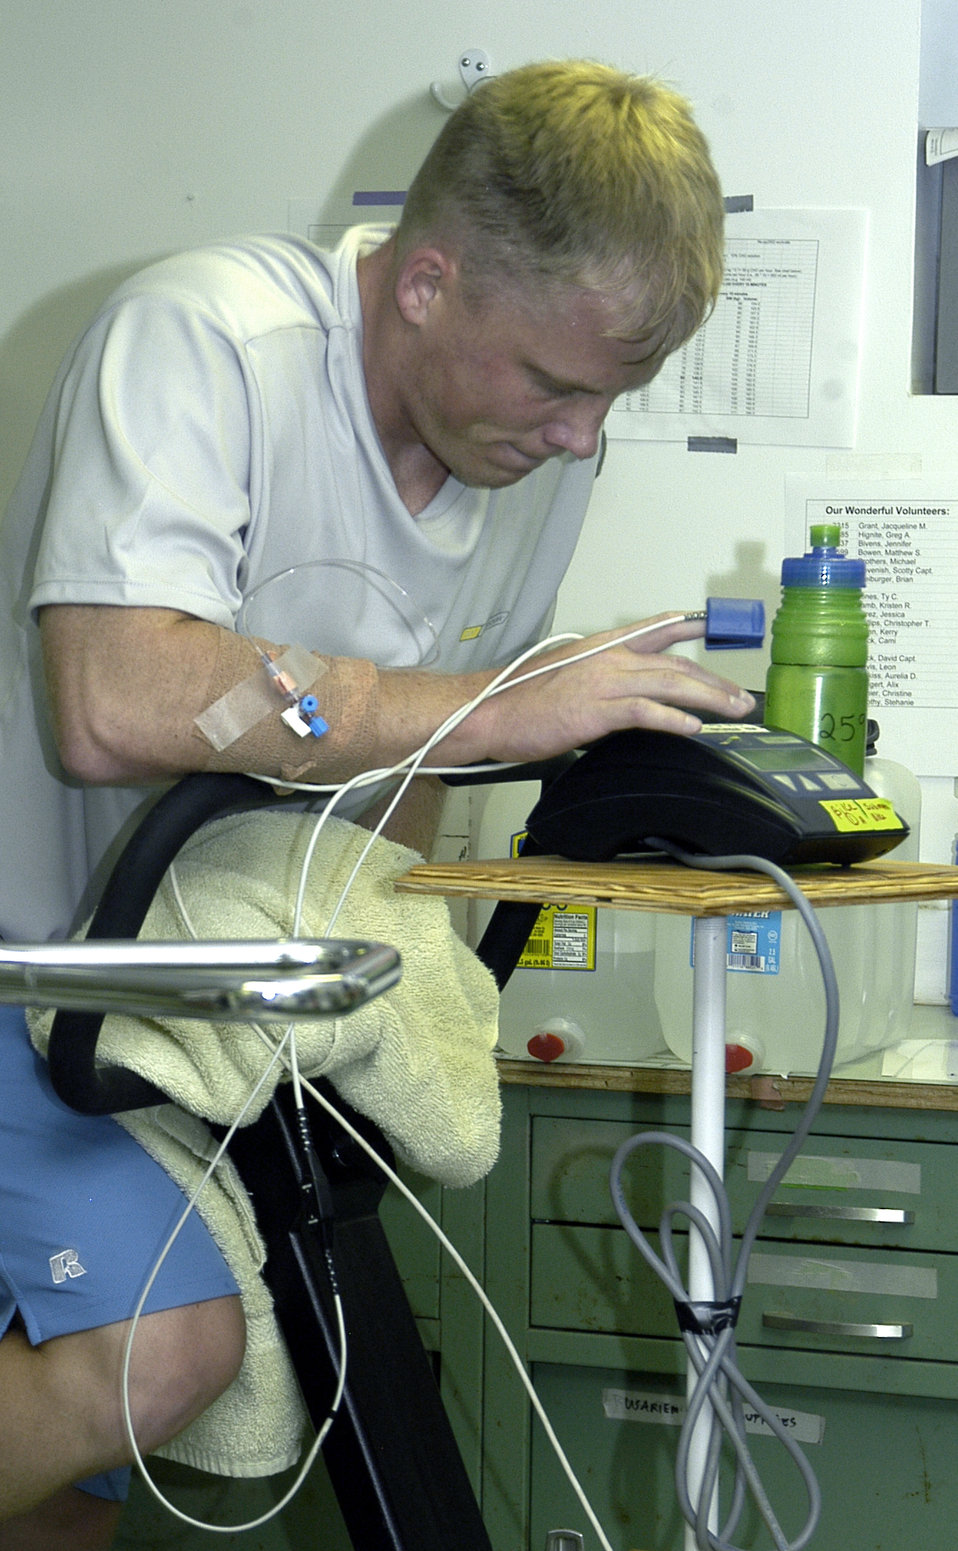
Using the Index for research

PIKES PEAK, Colo. -- Staff Sgt. Matt Bowen has a catheter in his arm and wears a meter on his index finger to measure his oxygen intake as part of an altitude research study here. Sergeant Bowen is one of 18 Airmen living on the summit of Pikes Peak this summer to gauge how the body reacts to living and exercising in a high-alpine environment.